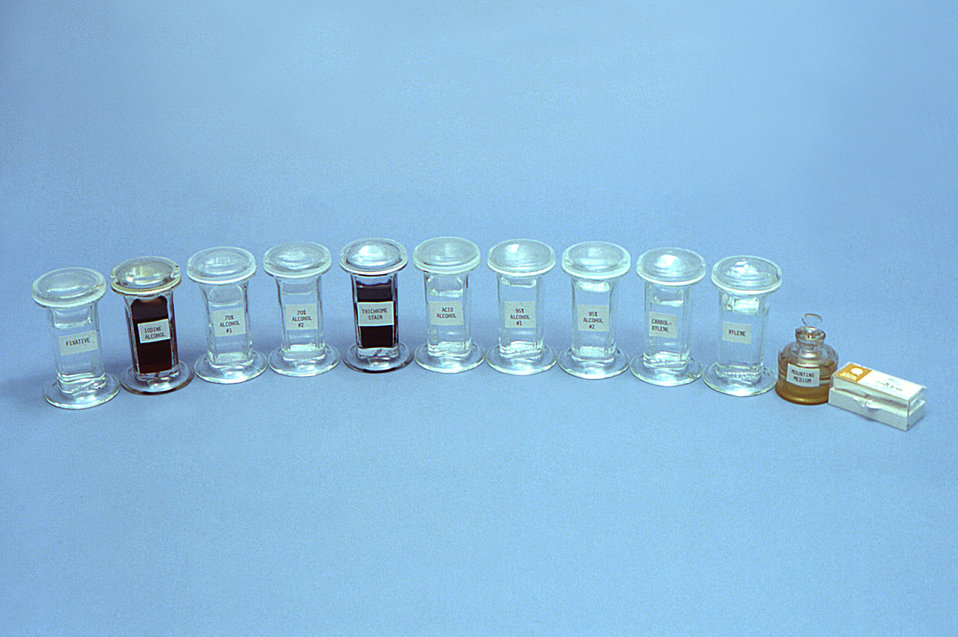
This 1981 photograph depicted a number of Coplin jars ready for what would be a trichrome staining procedure.Trichrome Staining Procedure